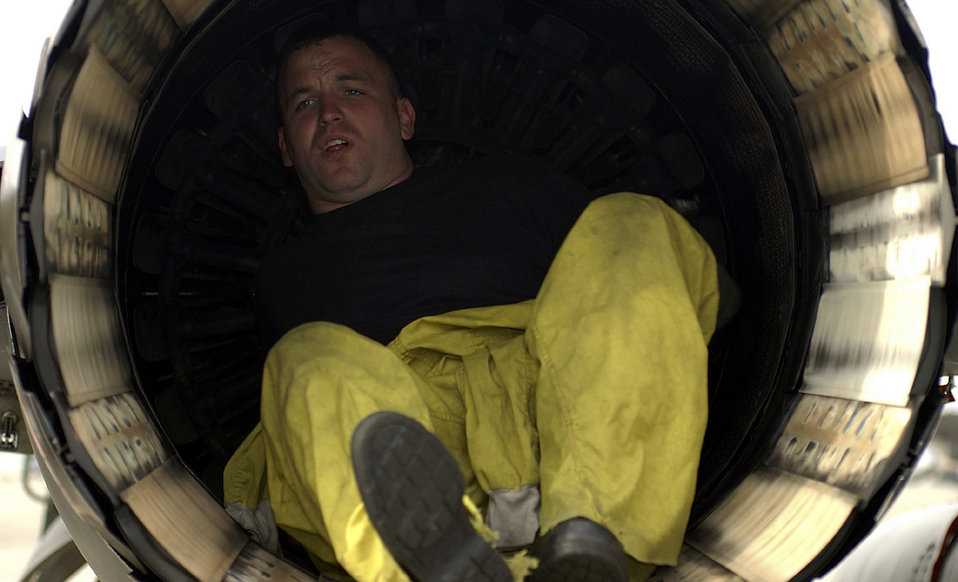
Staff Sgt. works insdie F-16 exhaust.

TSUIKI AIR BASE, Japan -- Staff Sgt. Hale Lewis, crew chief, works inside the exhaust of a F-16C/D Nov. 12, 2002. He is with the 35th Fighter Squadron, Kunsan Air Base, South Korea. Lewis is taking part in this year's Exercise Keen Sword 03 being held here. Keen Sword 03 is a bilateral defense exercise that practices defending Japan against foreign aggression. The goal of the exercise is to accomplish interoperability between Japan Air Self Defense Force, U.S. Air Force, U.S. Navy and U.S. Marine Corps and to exercise command and control systems of the JASDF.